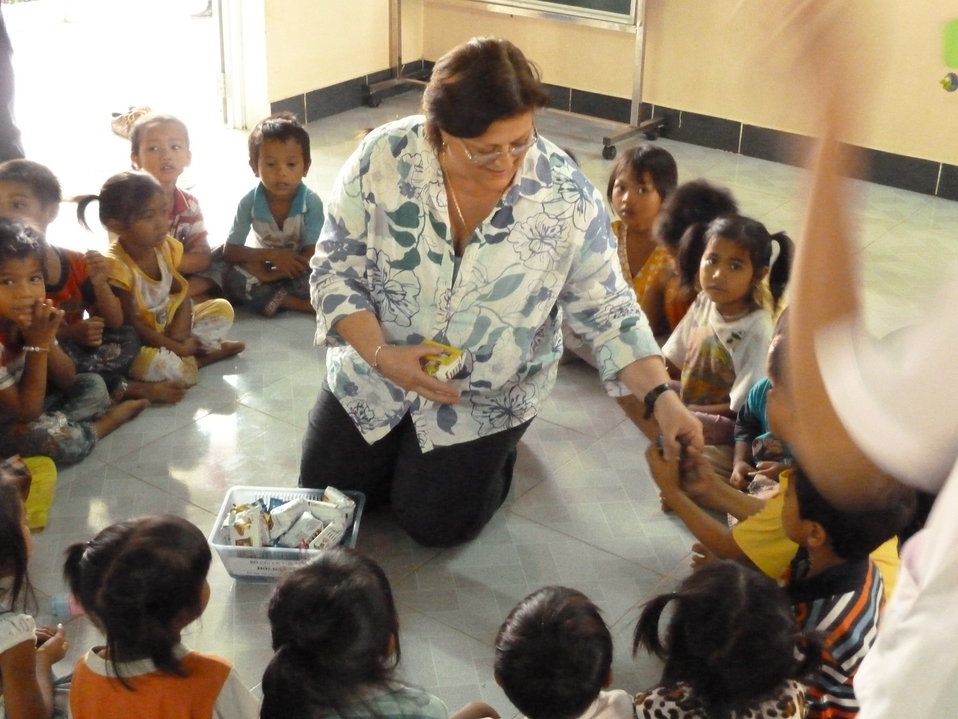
U.S. Deputy Chief of Mission Claire Pierangelo visits children at a preschool refurbished with USAID funds